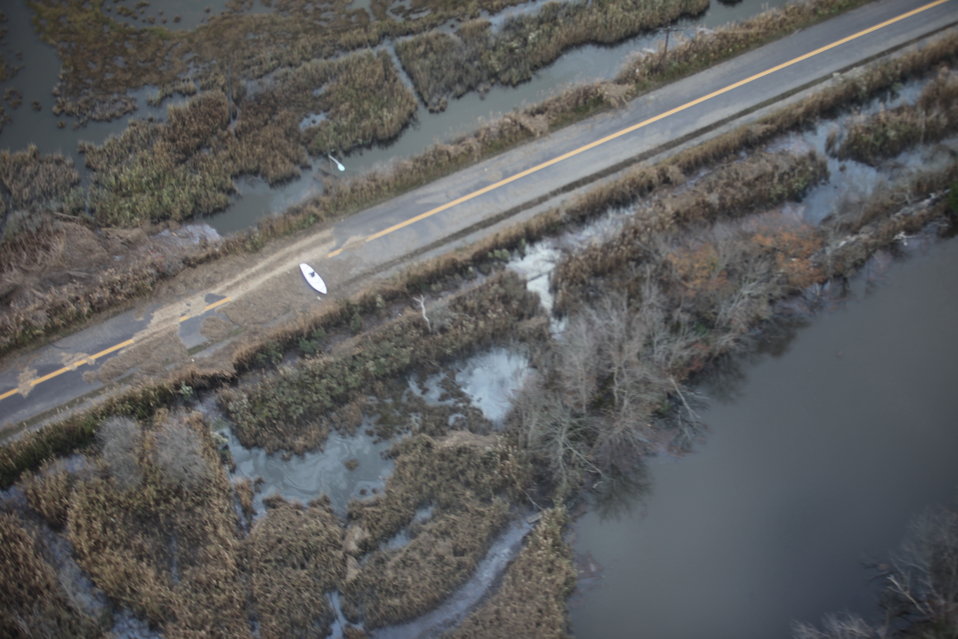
Sailboat on the road at Seatuck National Wildlife Refuge (NY)

Road debris and lost sailboat at the Seatuck National Wildlife Refuge on Long Island, NY in the aftermath of storm Sandy.